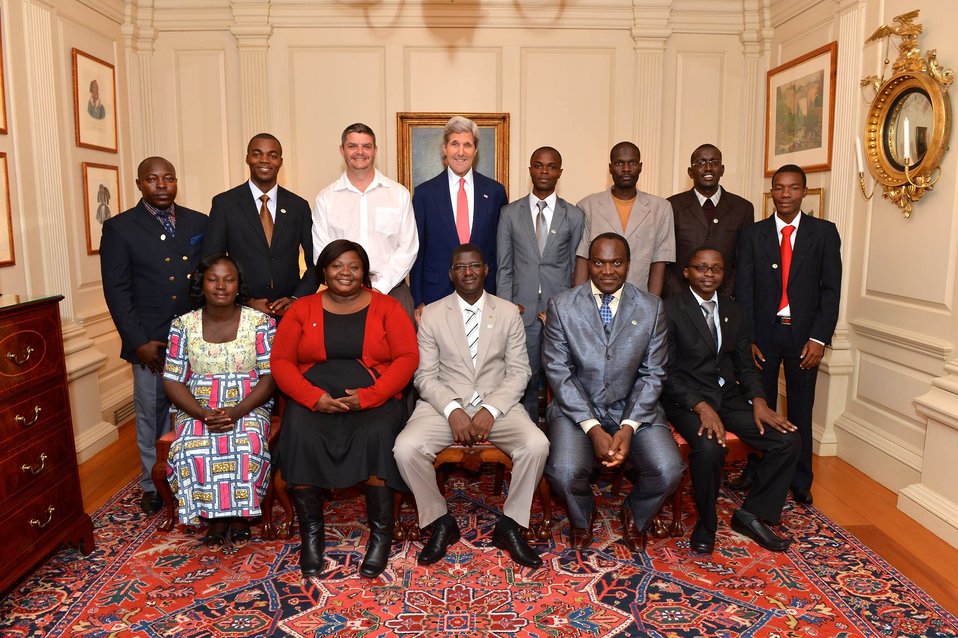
Secretary Kerry Meets With Anti-Poaching and Anti-Wildlife Trafficking International Visitor Leadership Program Participants

U.S. Secretary of State John Kerry meets with conservationists and law enforcement officials from 12 African nations visiting the United States as part of the Wildlife Conservation: Anti-Poaching and Anti-Trafficking International Visitor Leadership Program (IVLP), at the U.S. Department of State in Washington, D.C., on May 6, 2014.